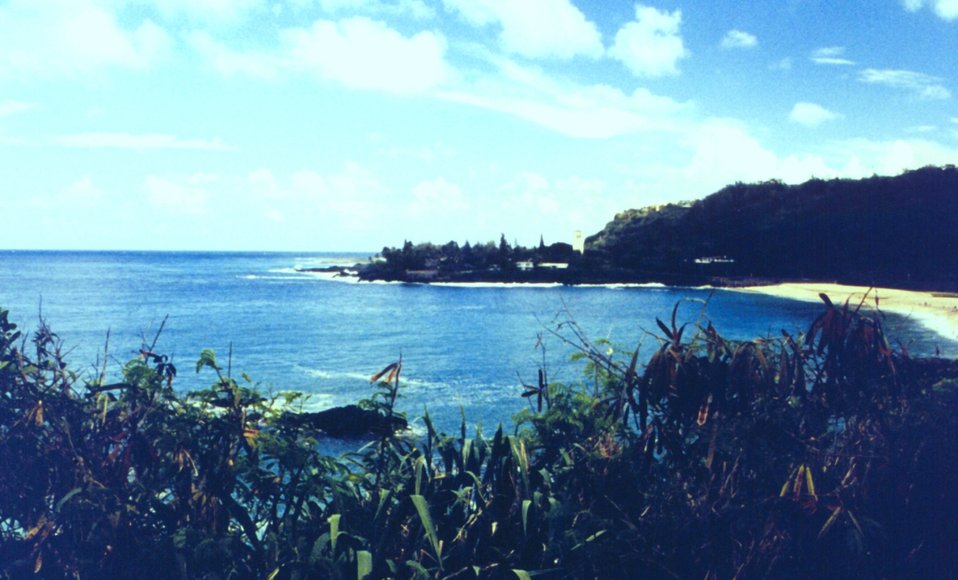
Waiamea Bay, the scene of huge winter surf.